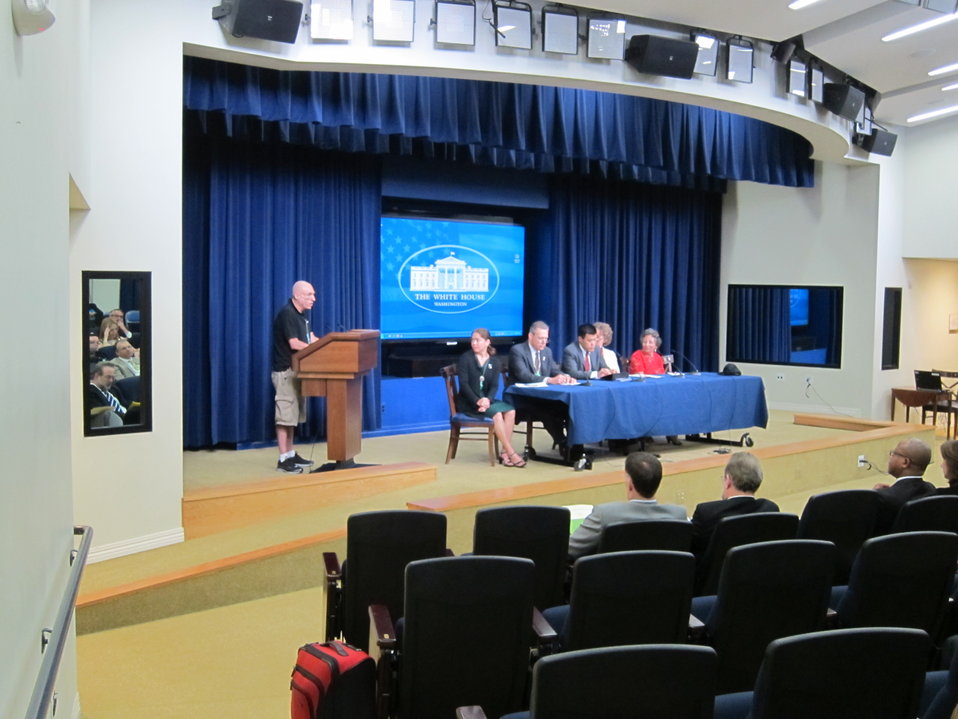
WH 2012 World Hepatitis Day Event